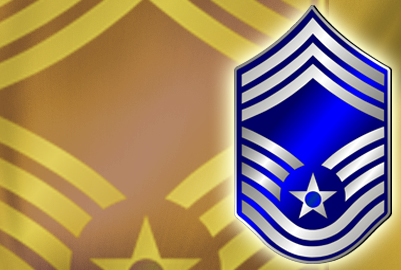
CMSgt turns 50

Chief master sgt. rank (E-9) turns 50 on Dec.1, 2009